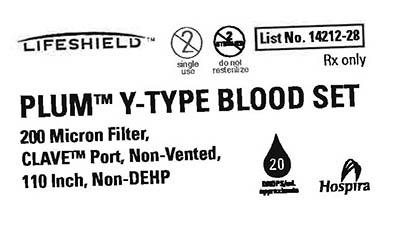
RECALLED – Blood sets used for the administration of blood and blood products

August 13, 2013 – Product Recall – Hospira Issues Important Safety Information for Blood Sets.